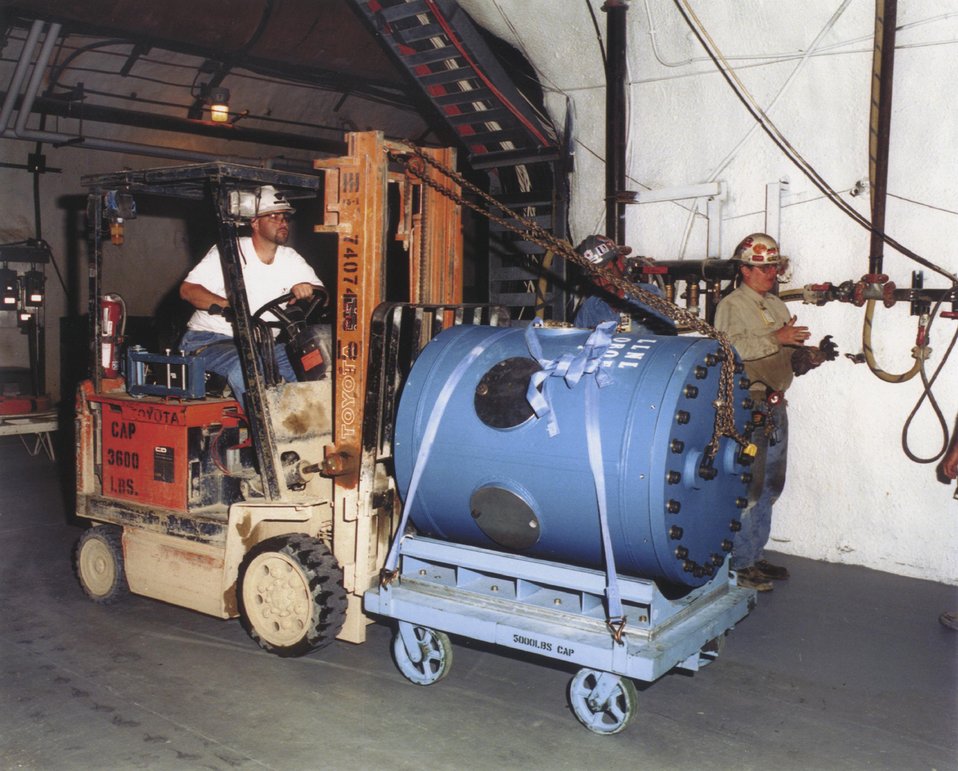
CONFINEMENT VESSEL TRANSPORTED TO THE EXPERIMENTAL ALCOVE WHERE IT WILL CONFINE THE GASES AND RADIOACTIVE DEBRIS GENERATED DURING AN EXPERIMENT.

EXPLOSIVE TESTS ARE CONDUCTED DEEP UNDER THE NEVADA DESERT BY LAWRENCE LIVERMORE NATIONAL LABORATORY PHYSICISTS AND ENGINEERS. THE SUBCRITICAL EXPERIMENTS ARE AIMED AT PROVIDING IMPORTANT DATA TO EXPERTS WATCHING OVER THE NATION'S NUCLEAR STOCKPILE.